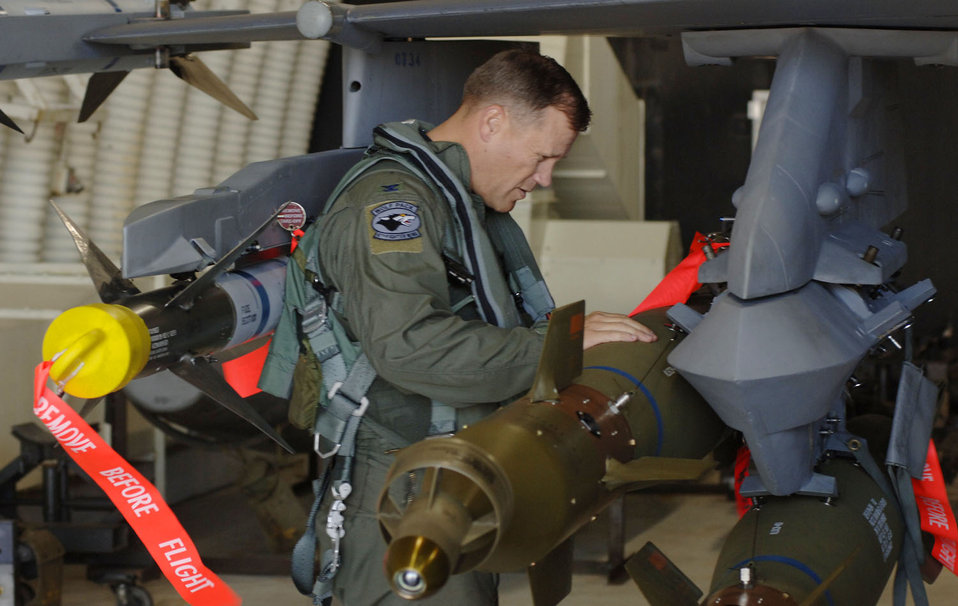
Kunsan Air Base maintains readiness

Colonel Jeffrey Lofgren, 8th Fighter Wing commander, performs a preflight check to make sure everything is in order before a mission in an F-16 Fighting Falcon at Kunsan Air Base, South Korea.